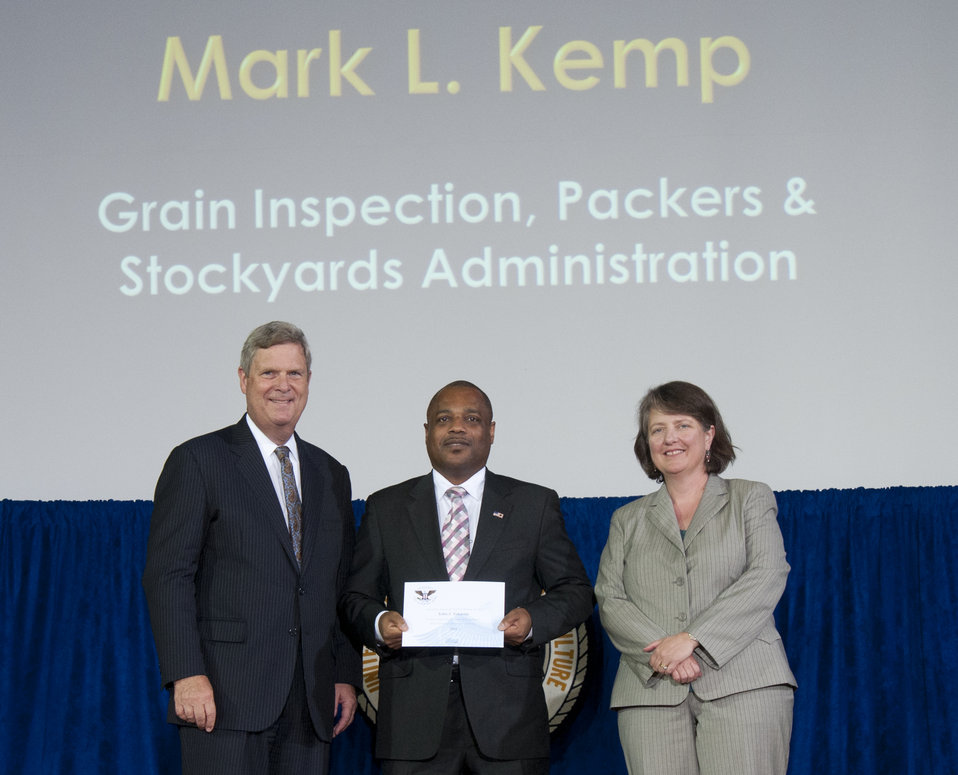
Agriculture Secretary Tom Vilsack and Agriculture Deputy Secretary Kathleen Merrigan present the President’s Volunteer Service Award to Grain Inspection, Packers and Stockyards Administration (GIPSA) employee Mark L. Kemp at the U.S. Department of Agriculture (USDA) 64th Annual Honor Awards Ceremony in Washington, D.C. on Wednesday, Sept. 12, 2012. The President’s Call to Service Award is presented to an employee who has served 4,000 hours or more of service with a qualifying organization over the employee’s lifetime.